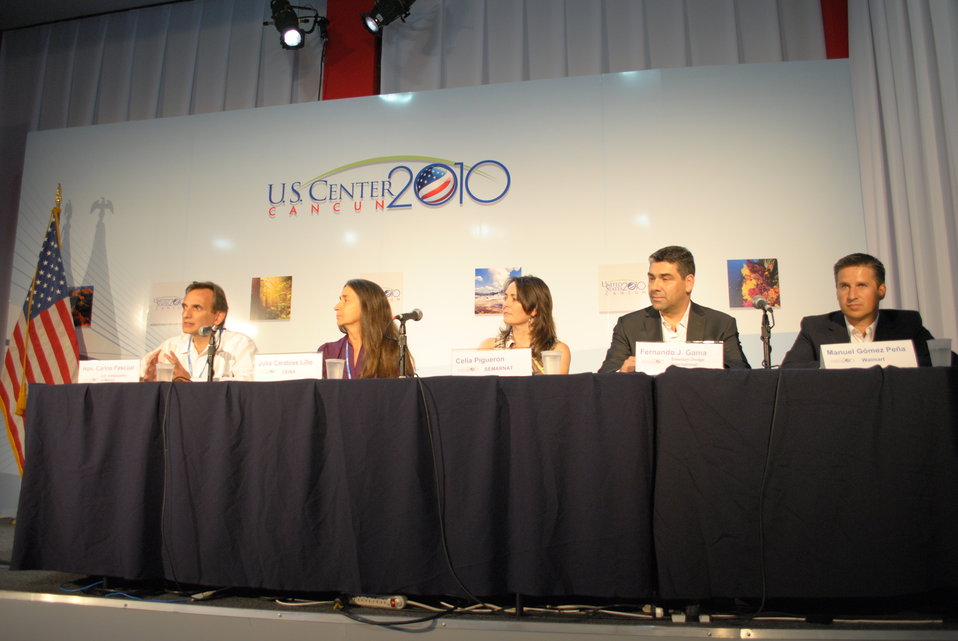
The U.S. and Mexico Bi-National Cooperation on Climate Change and Development Panel Listens to a Question

Members of the U.S. and Mexico Bi-National Cooperation on Climate Change and Development, including U.S. Ambassador to Mexico Carlos Pascual, left, listen to a question from a member in the audience at the U.S. Center at COP-16 in Cancun, Mexico, on December 8, 2010.